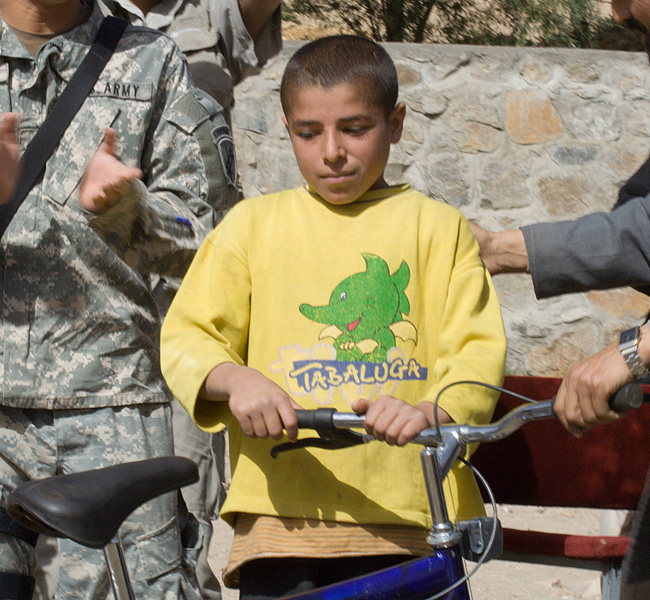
Reconstruction team dedicates water well

One of the top students at the Rohka School in the Panjshir Province in Afghanistan receives a bicycle for his academic achievements. The bicycle was given by the Panjshir Provincial Reconstruction Team. The PRT also presented backpacks, pens, pencils, notepads and other donated supplies to students at the school's new well dedication ceremony Oct. 21.